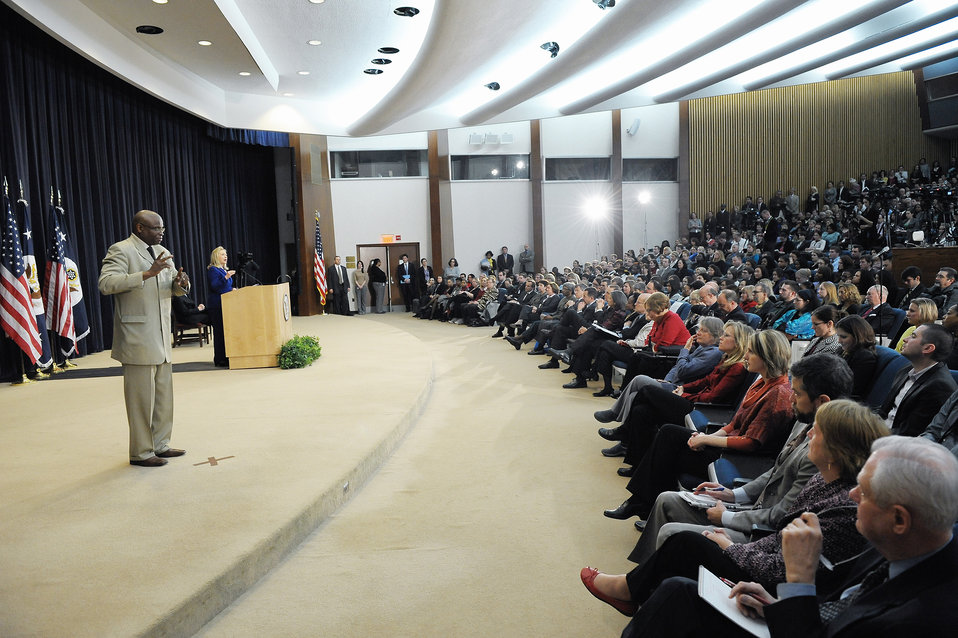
Secretary Clinton Holds a Town Hall Meeting at the Department of State

U.S. Secretary of State Hillary Rodham Clinton holds a town hall meeting at the Department of State in Washington, D.C. on January 26, 2012.